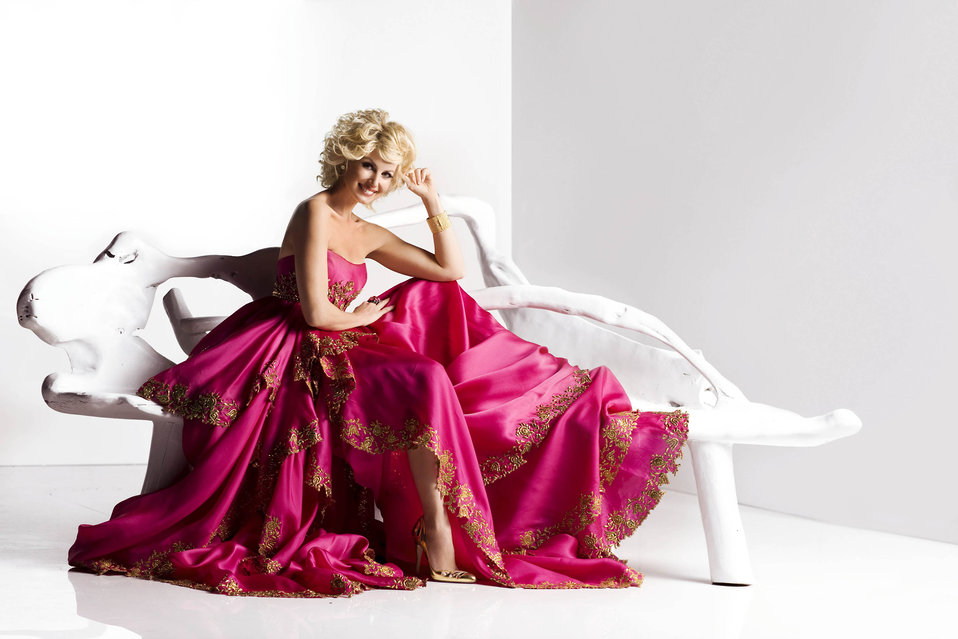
Air Force radio show features Faith Hill

Country music star Faith Hill collaborated with the Air Force Recruiting Service for the 2008